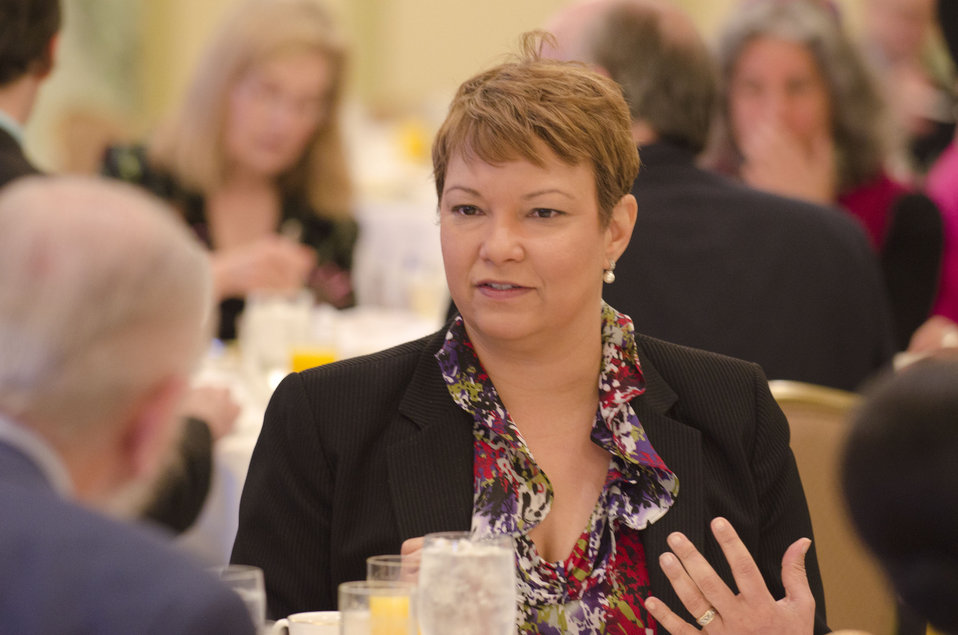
2011-05-05 NRCCCPrayerBreakfast 013

US EPA Administrator Lisa P. Jackson gestures while talking. Administrator Jackson received the Steward of God's Creation Award from the National Religious Coalition on Creation Care.